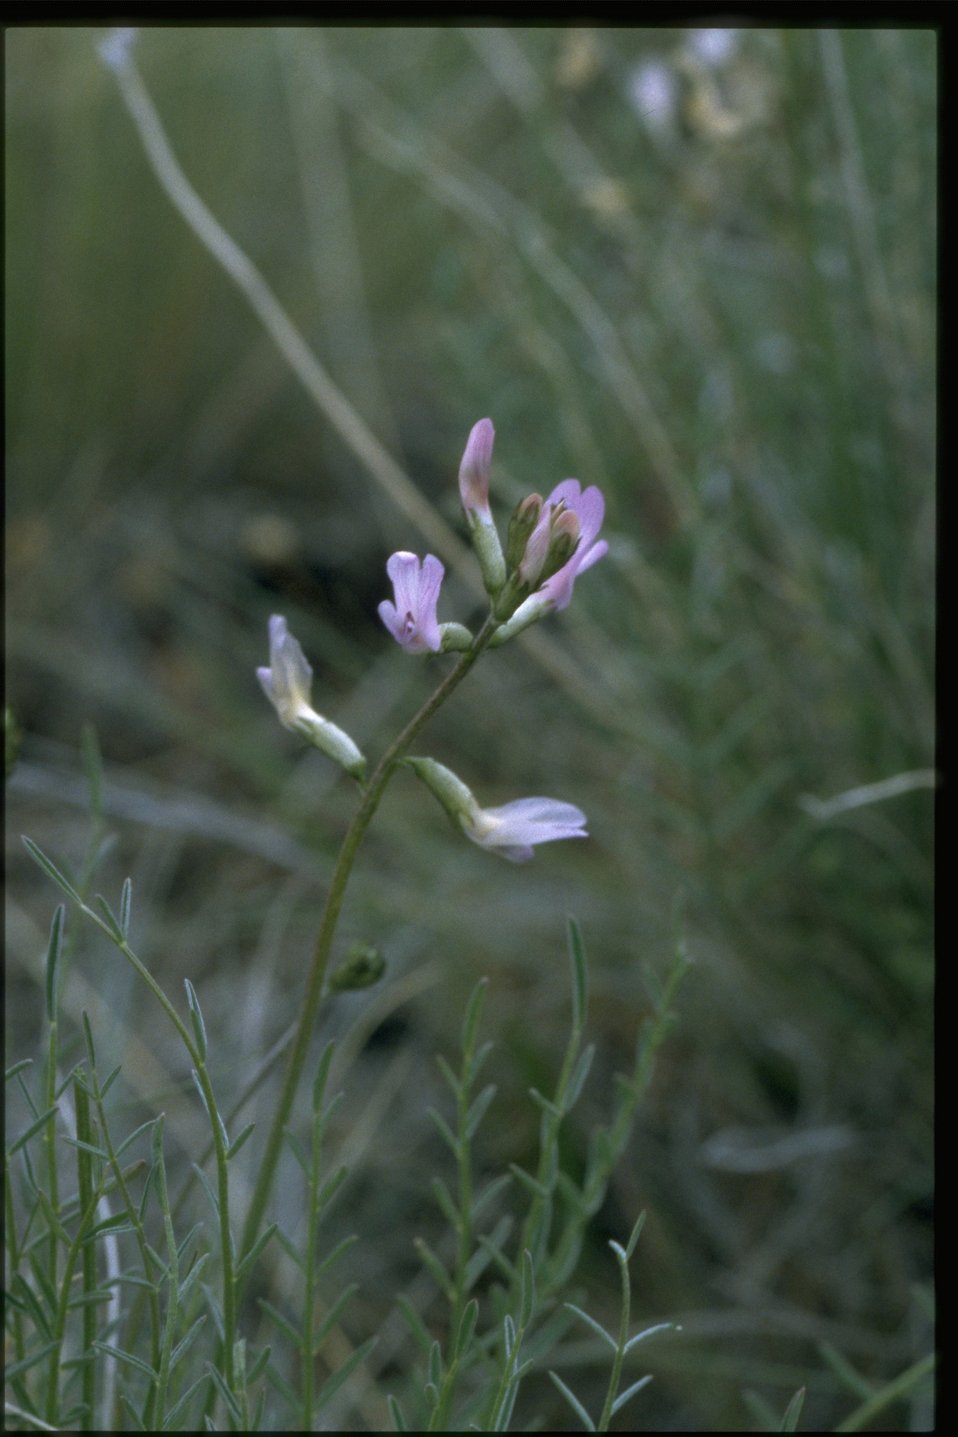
Closeup shot of Idaho Milkvetch (Astragalus conjunctus).